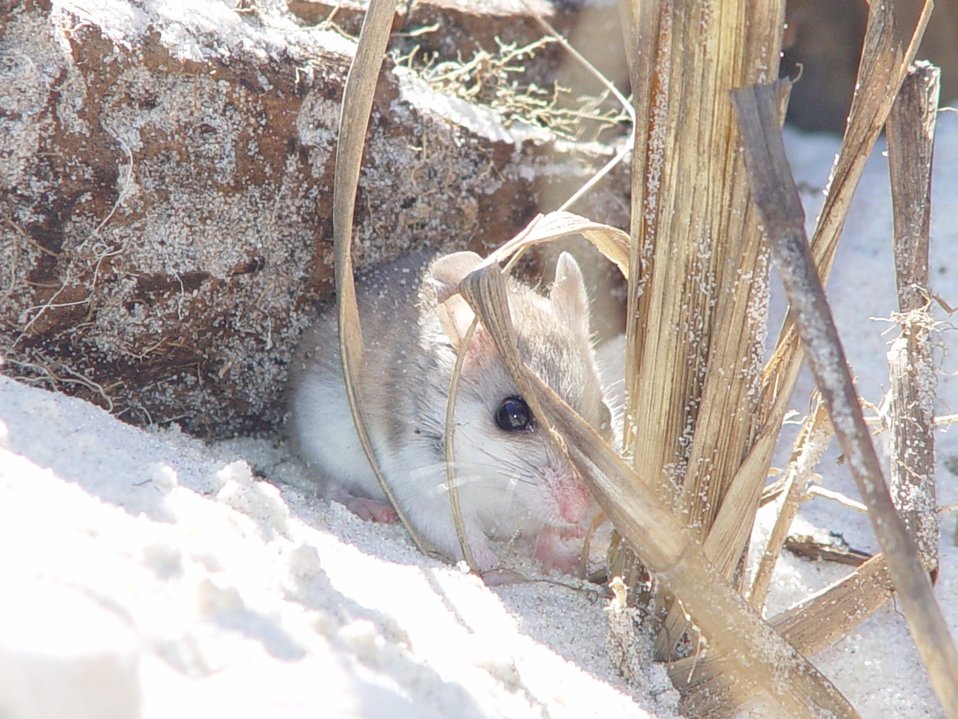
Beach mouse, Alabama